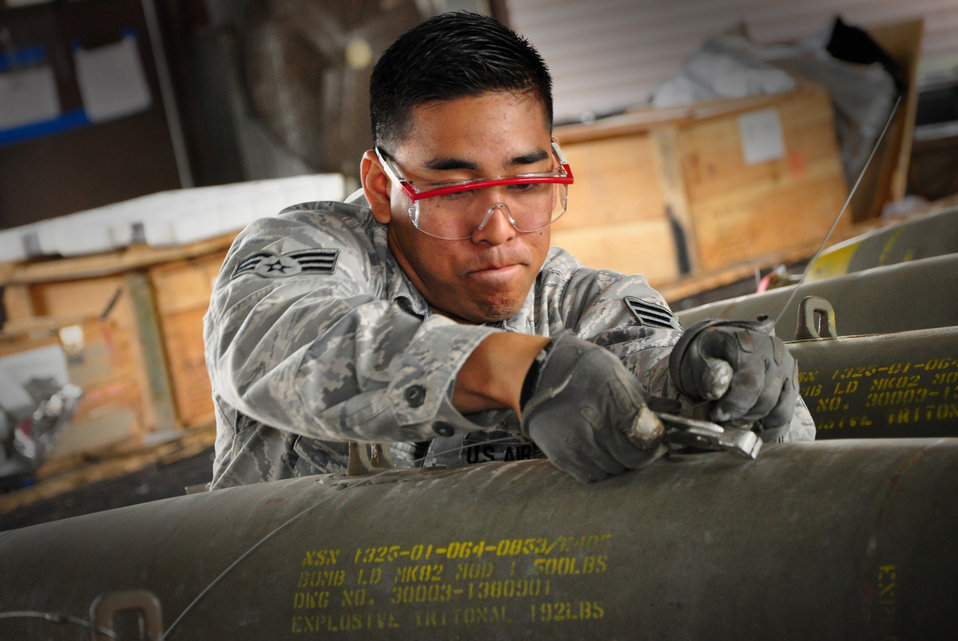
Loading munitions

An Airman clips a wire while preparing a bomb for loading onto an A-10 Thunderbolt II May 3, 2011, at Osan Air Base, South Korea.